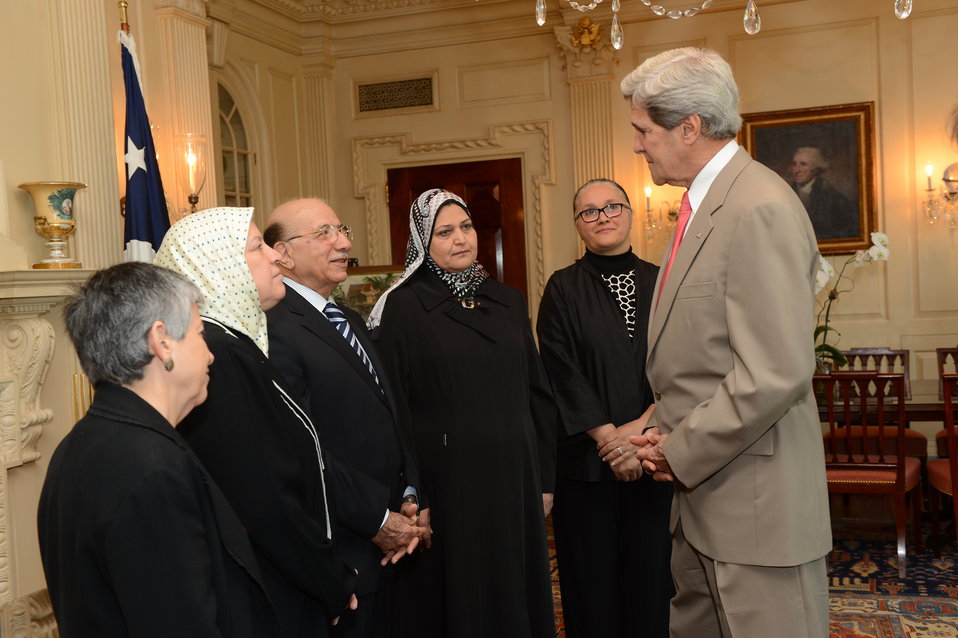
Secretary Kerry Speaks With Iraqi Government and Civil Society Leaders

U.S. Secretary of State John Kerry speaks with senior Iraqi government officials and civil society leaders, who are participating in a U.S. program to support Iraqi widows and female heads of household, at the U.S. Department of State in Washington, D.C., on June 14, 2013.